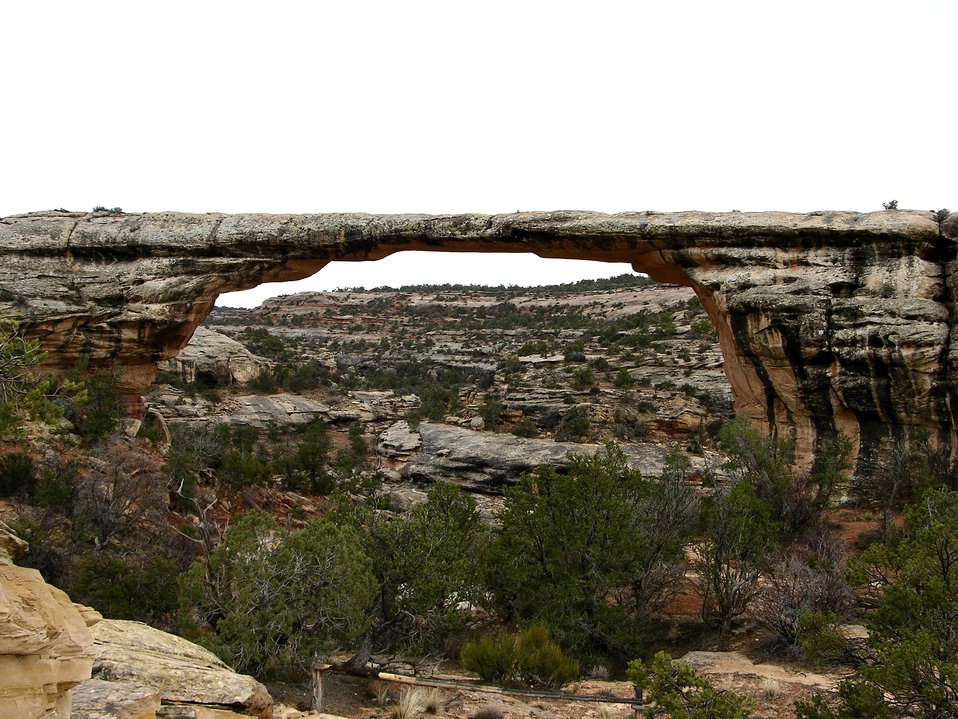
A natural bridge formation generated by wind and water erosion.